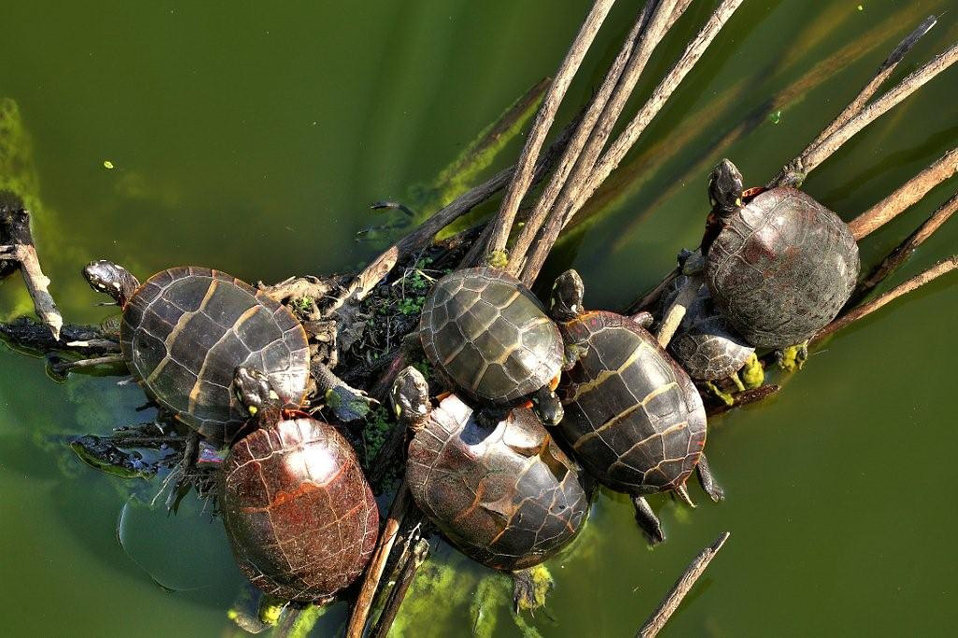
Painted turtles at John Heinz National Wildlife Refuge in Philadelphia, Pennsylvania.